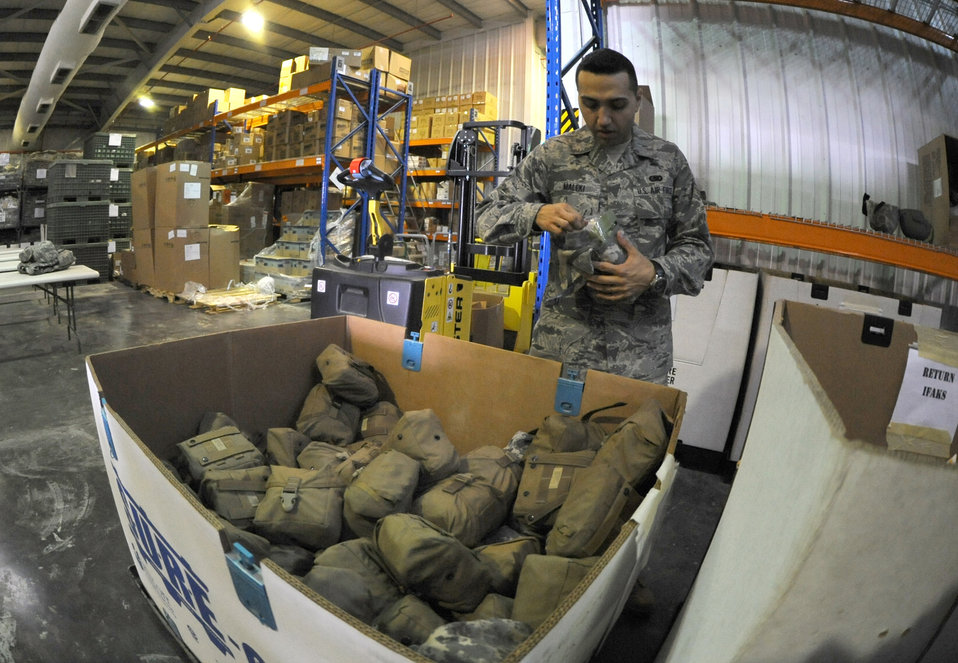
Supply Airman provides deployed troops with more than just equipment

Airman 1st Class Miad Maleki inspects an individual first aid kit Dec. 1, 2011, at the 380th Air Expeditionary Wing. Maleki, a native of Tehran, Iran, is a material management journeyman for the 380th Expeditionary Logistics Readiness Squadron. He issues, stores and maintains individual protective equipment, and is volunteering in his off time to teach a free Farsi class for the deployed troops at the wing.